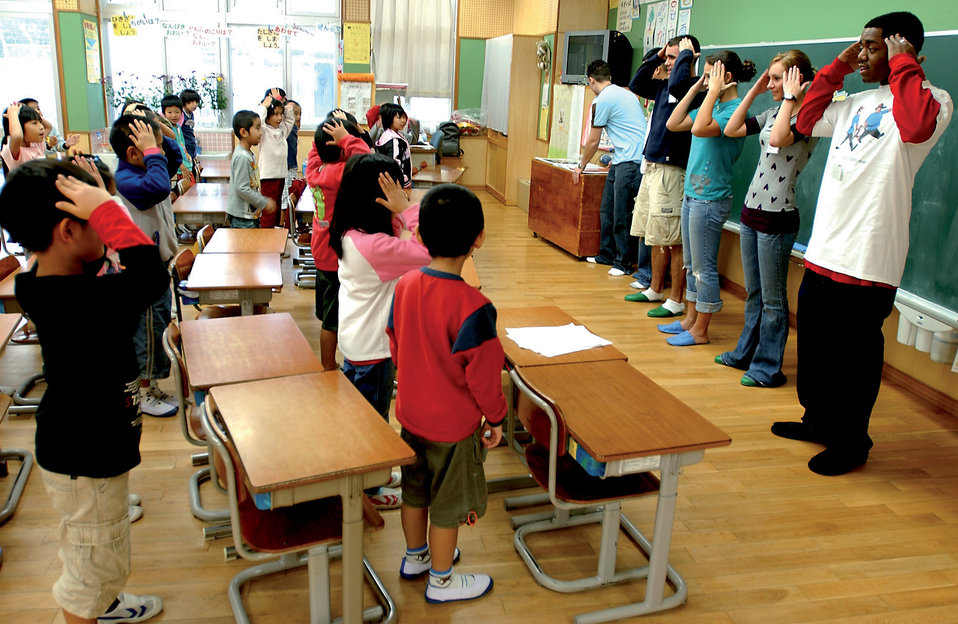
Teaching through songs and games

Airmen from Kadena Air Base, Japan sing